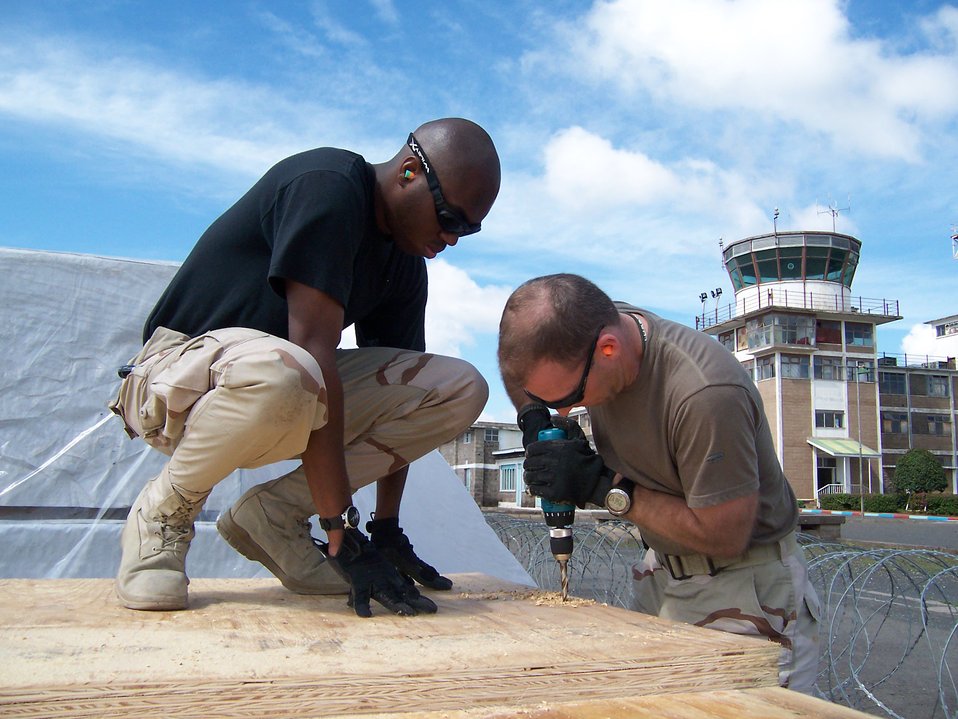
AF delivers much needed supplies to Kenya

Tech. Sgt. Terreon Shirlee (left) assists Capt. James King drill holes into plywood Dec. 8 that will serve as the base for pallets being air dropped into eastern Kenya. Sergeant Shirlee is an air transportation journeyman deployed to the 386th Expeditionary Logistics Readiness Squadron from Little Rock Air Force Base, Ark., and Captain King is the commander of the movement control team at the 386th ELRS deployed from Robins AFB, Ga.